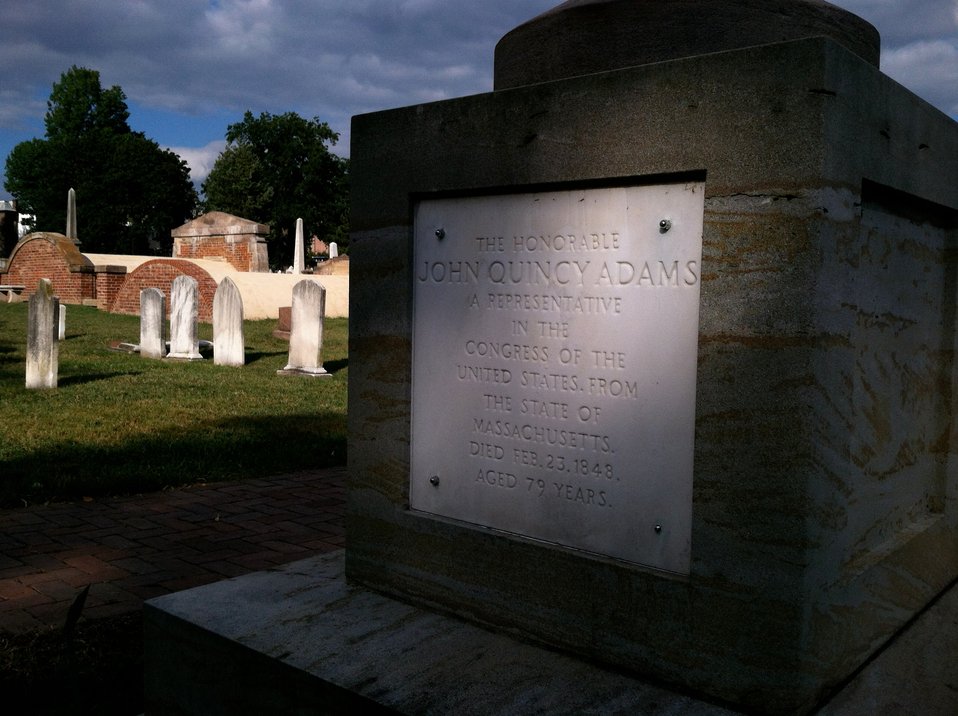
Cenotaph at the Congressional Cemetery

Cenotaph honoring John Quincy Adams, located in the Congressional Cemetery. These cenotaphs, designed by Architect of the Capitol Benjamin Henry Latrobe, honor congressmen who died in office and are on display at the Congressional Cemetery.